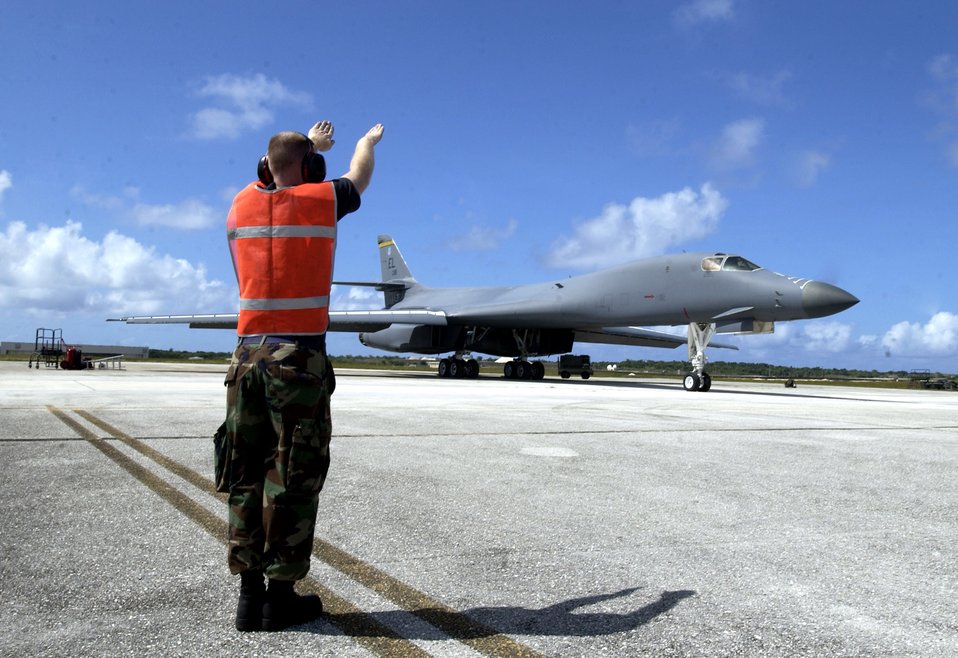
Presence in the Pacific

Senior Airman Patrick Bailey marshals a B-1B Lancer Monday, April 17, 2006, at Andersen Air Force Base, Guam. He is assigned to the 36th Expeditionary Aircraft Maintenance Squadron.